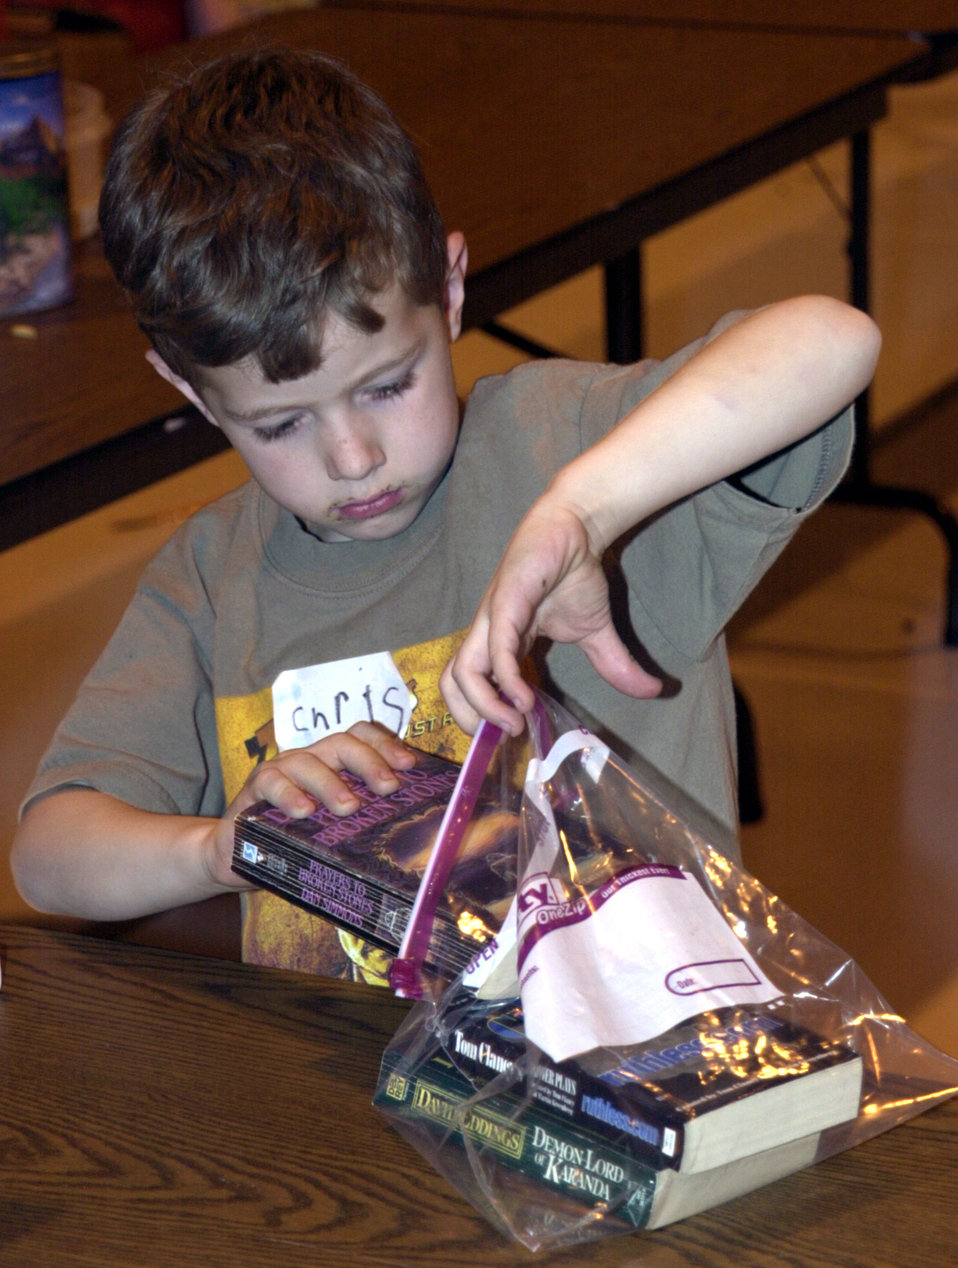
Care package

ANDREWS AIR FORCE BASE, Md. -- Chris Turner, age 6, puts books into a plastic bag that will be sent in a care package to his father’s deployed unit, the 113th Aircraft Generation Squadron, D.C. Air National Guard. Master Sgt. Mike Turner and other members of the squadron have been deployed for nearly two months. Families of the D.C. ANG gathered April 12 at Andrews Air Force Base, Md., for a pot-luck dinner, children’s games and a chance to help relieve some of the stress associated with the deployment of a loved one.